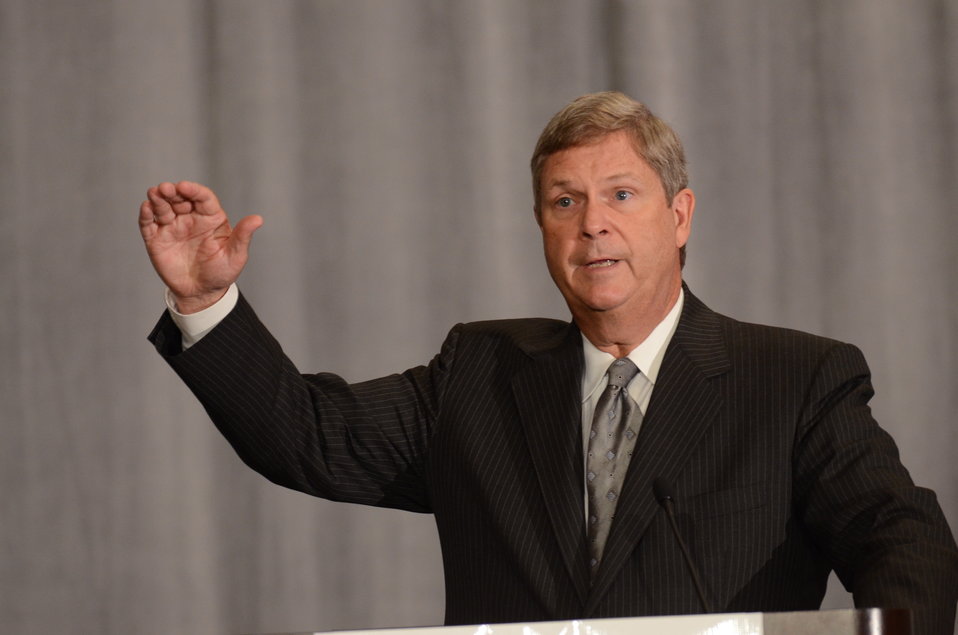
Agriculture Secretary Tom Vilsack speaks at the International Association for Food Protection (IAPP) 100th annual meeting in Milwaukee, WI, on Wednesday, August 3, 2011. IAPP is committed to providing members worldwide with a forum to exchange information on protecting the global food supply.